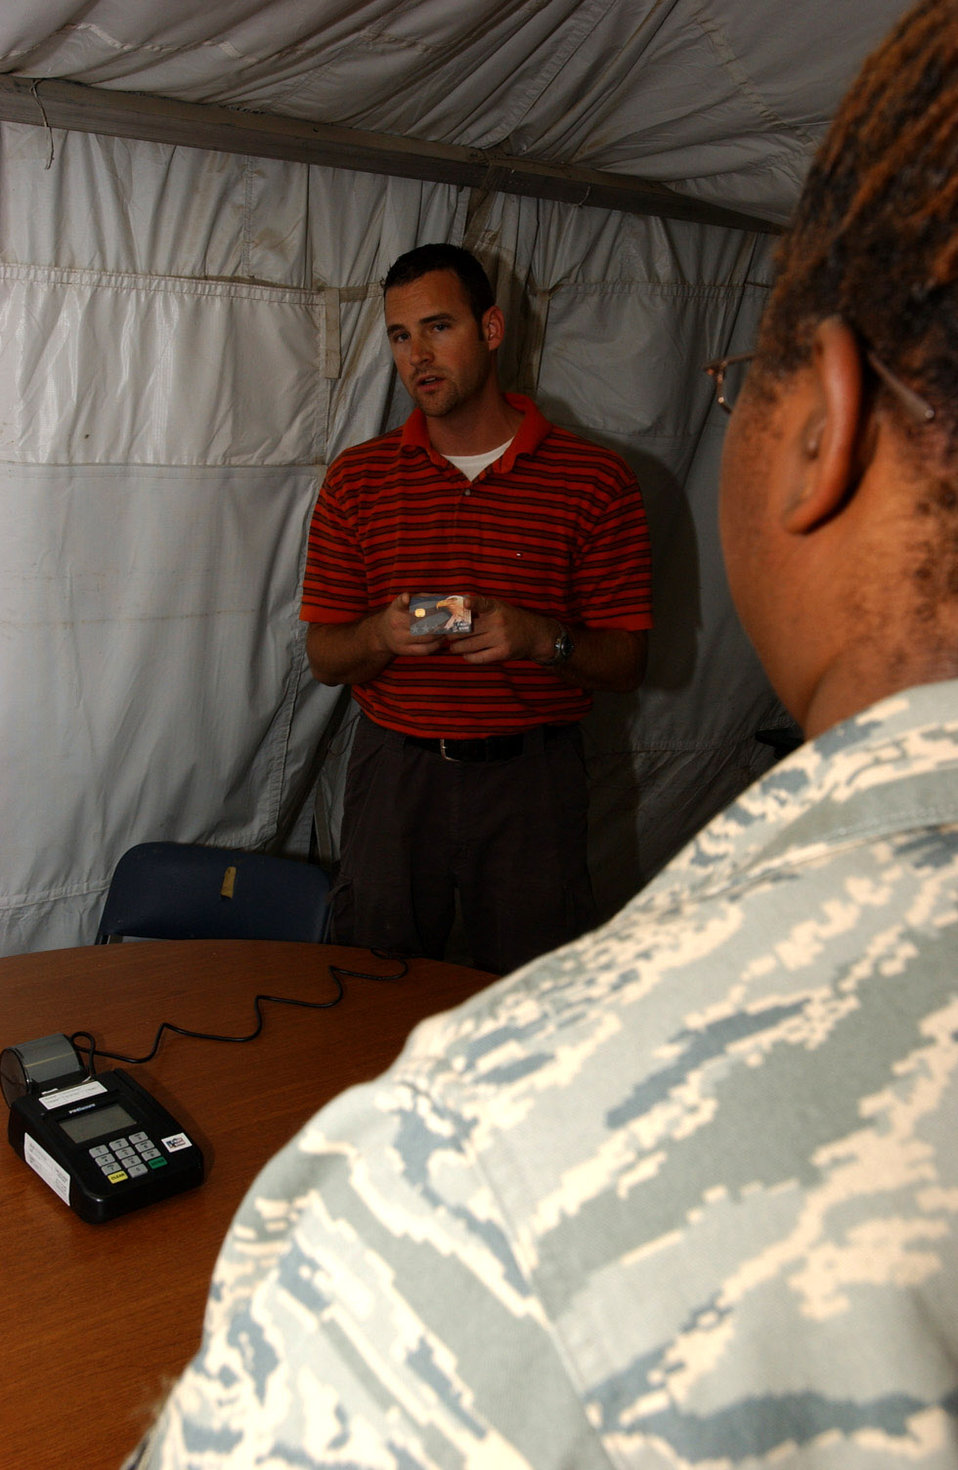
EagleCash lands at Ali Base

Michael Bolin of the U.S. Department of the Treasury explains to Senior Airman Shakira Lawrence how EagleCash cards works Nov. 9 at Ali Air Base. The EC program provides instant access to funds electronically which potentially saves the thousands of dollars needed to transport hard currency in the area of responsibility. Airman Lawrence is assigned to the 407th Expeditionary Services Squadron and is deployed from Little Rock Air Force Base, Ark.